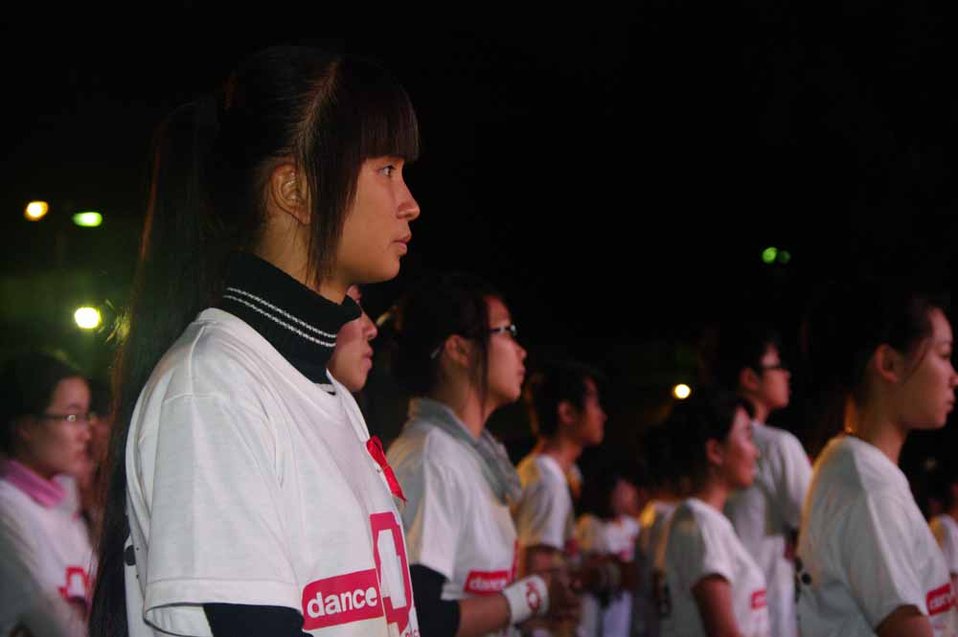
dance4life, Hanoi